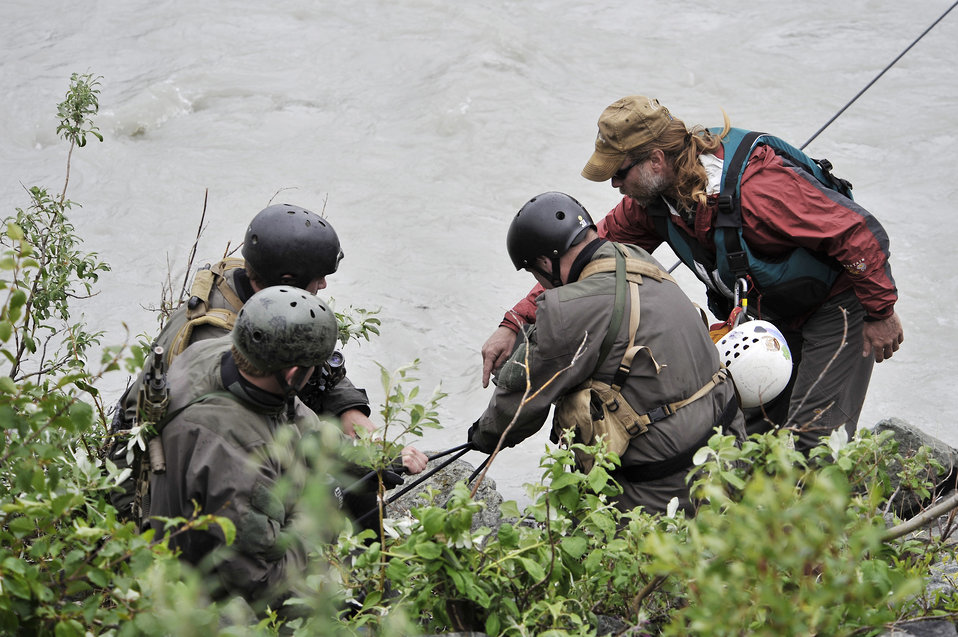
Navy SEALs train during Northern Edge 2009

Steven Decker teaches a group of Navy SEALs rope techniques during a river crossing exercise during Northern Edge 2009 June 17 at Fort Wainwright, Alaska. Northern Edge is a large-scale exercise hosted in Alaska to improve command, control and communications between the armed services. Mr. Decker is an instructor at the Northern Warfare Training Center.